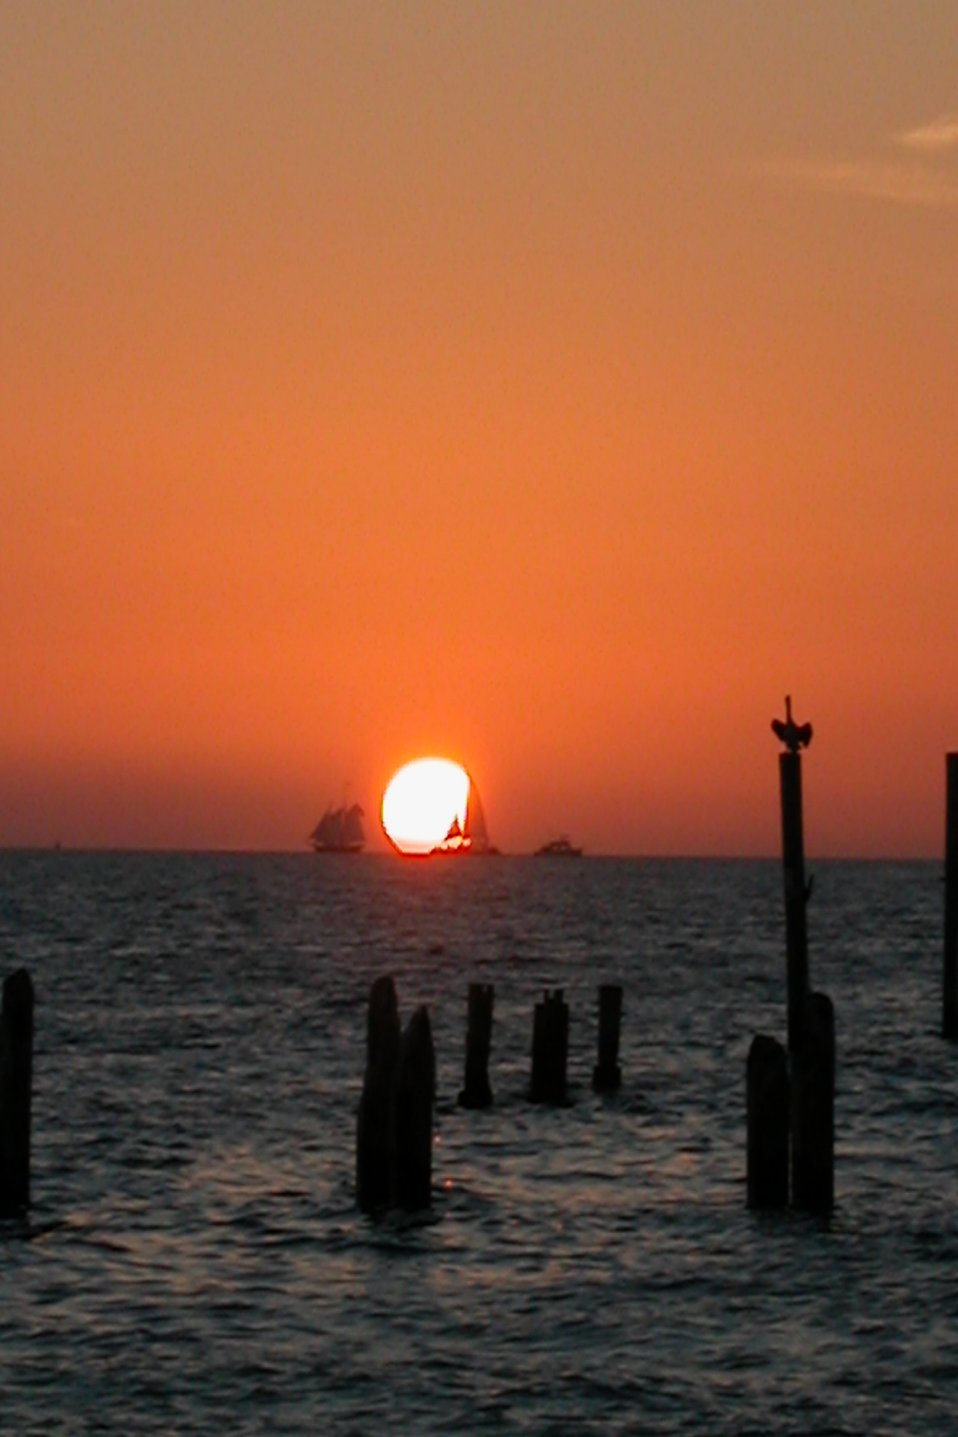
Red sails in the sunset #2.